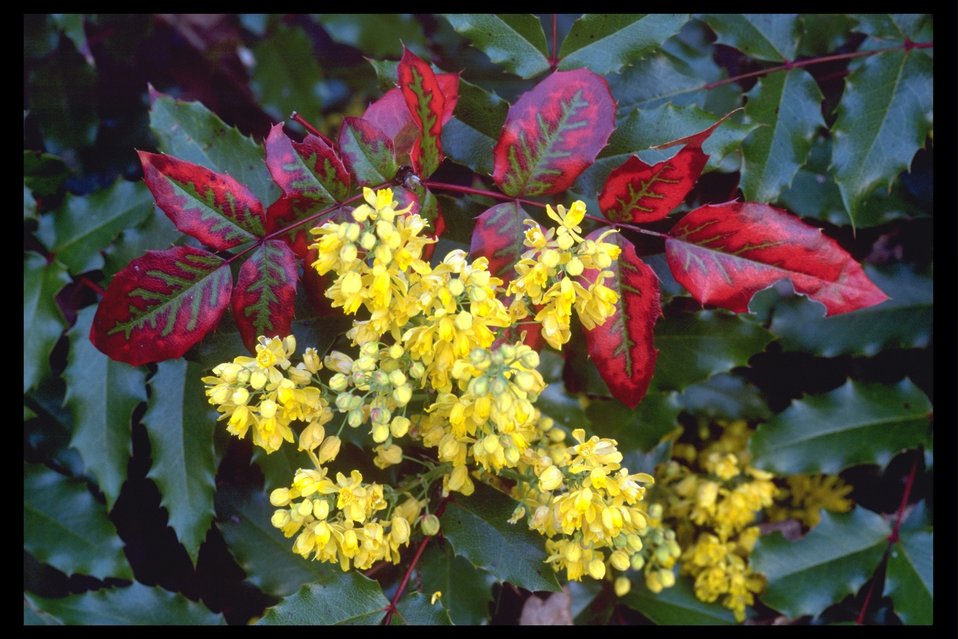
Tall Oregon Grape (Berbis aquifolium) at Shady Cove near the Rogue River.